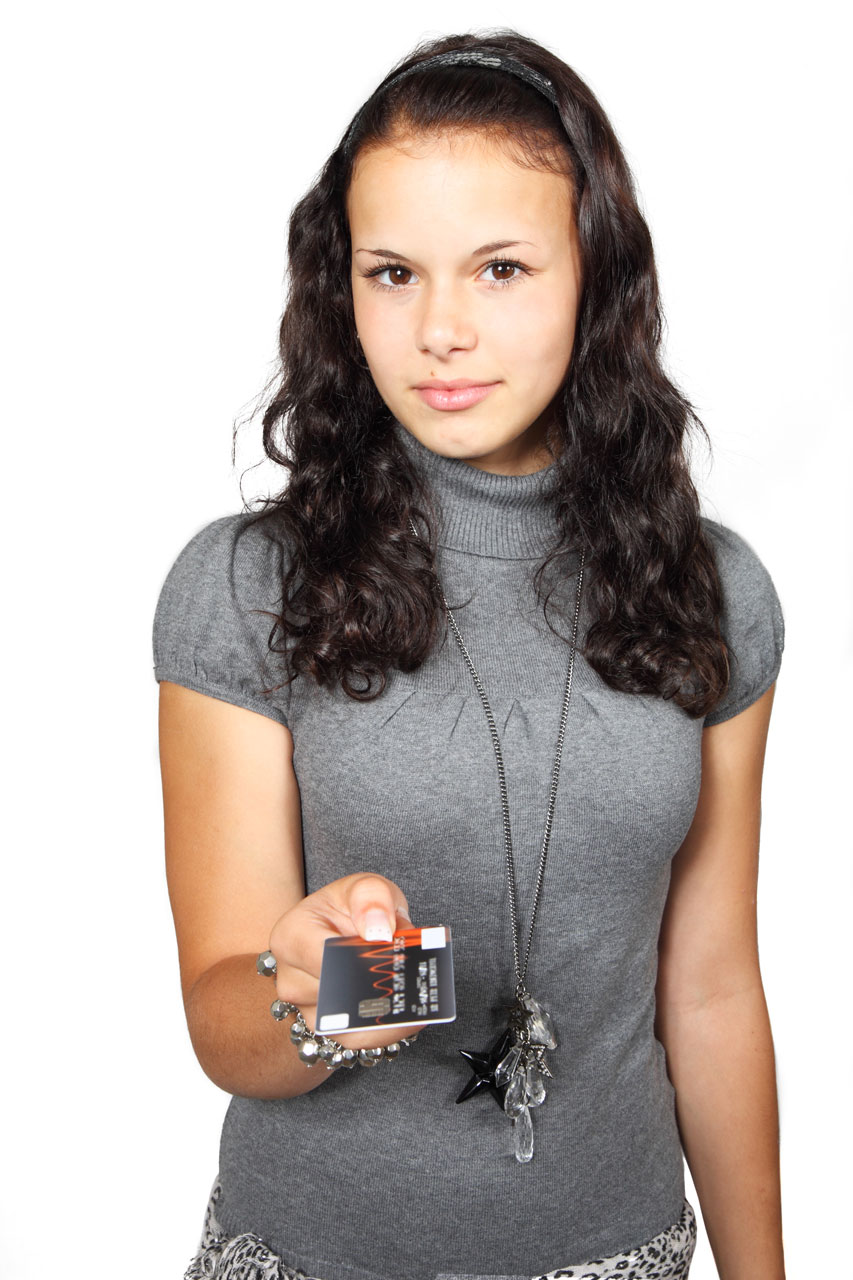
Woman paying with credit card

Young woman paying with a credit card.